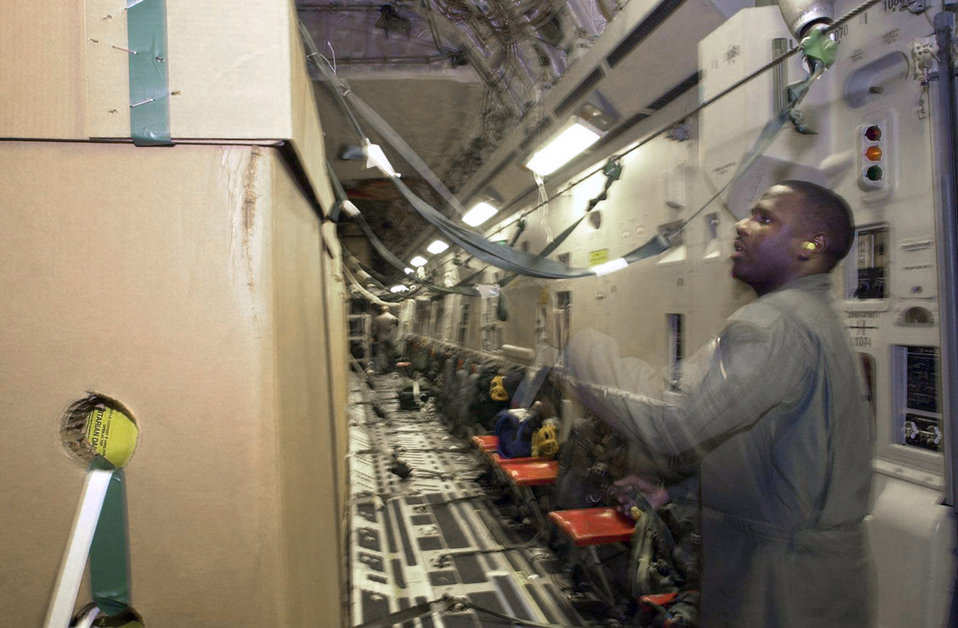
Ration Load

OPERATION ENDURING FREEDOM -- A U.S. Air Force loadmaster identified only as